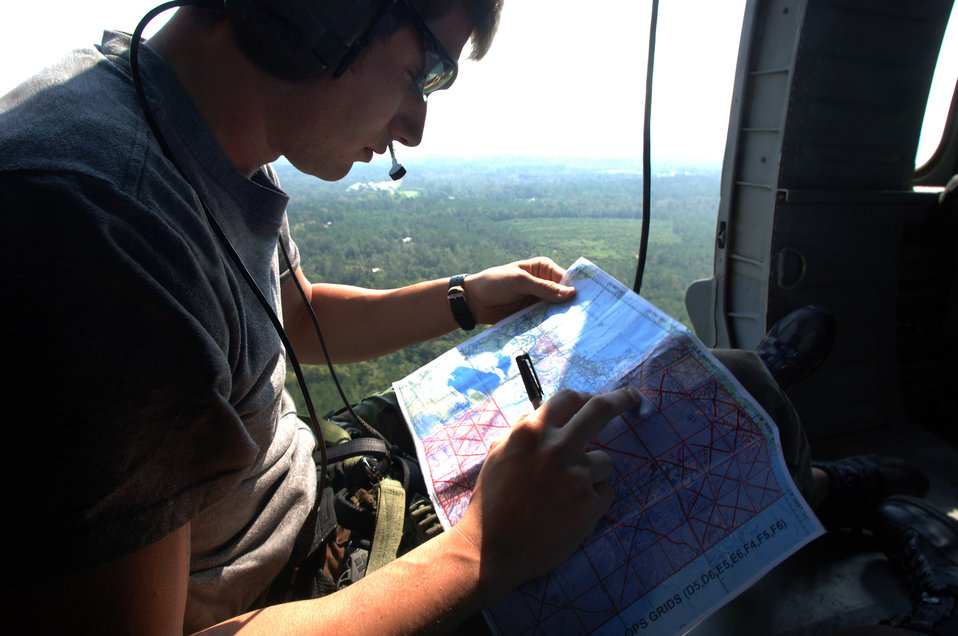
Airmen 'pave' way for help

OVER LOUISIANA -- An Air Force pararescueman uses a grid map of the U.S. southern coast to reference areas recently searched. Active-duty and Reserve rescue units are in Jackson, Miss., supporting the evacuation of civilians from New Orleans and other cities along the Gulf Coast.